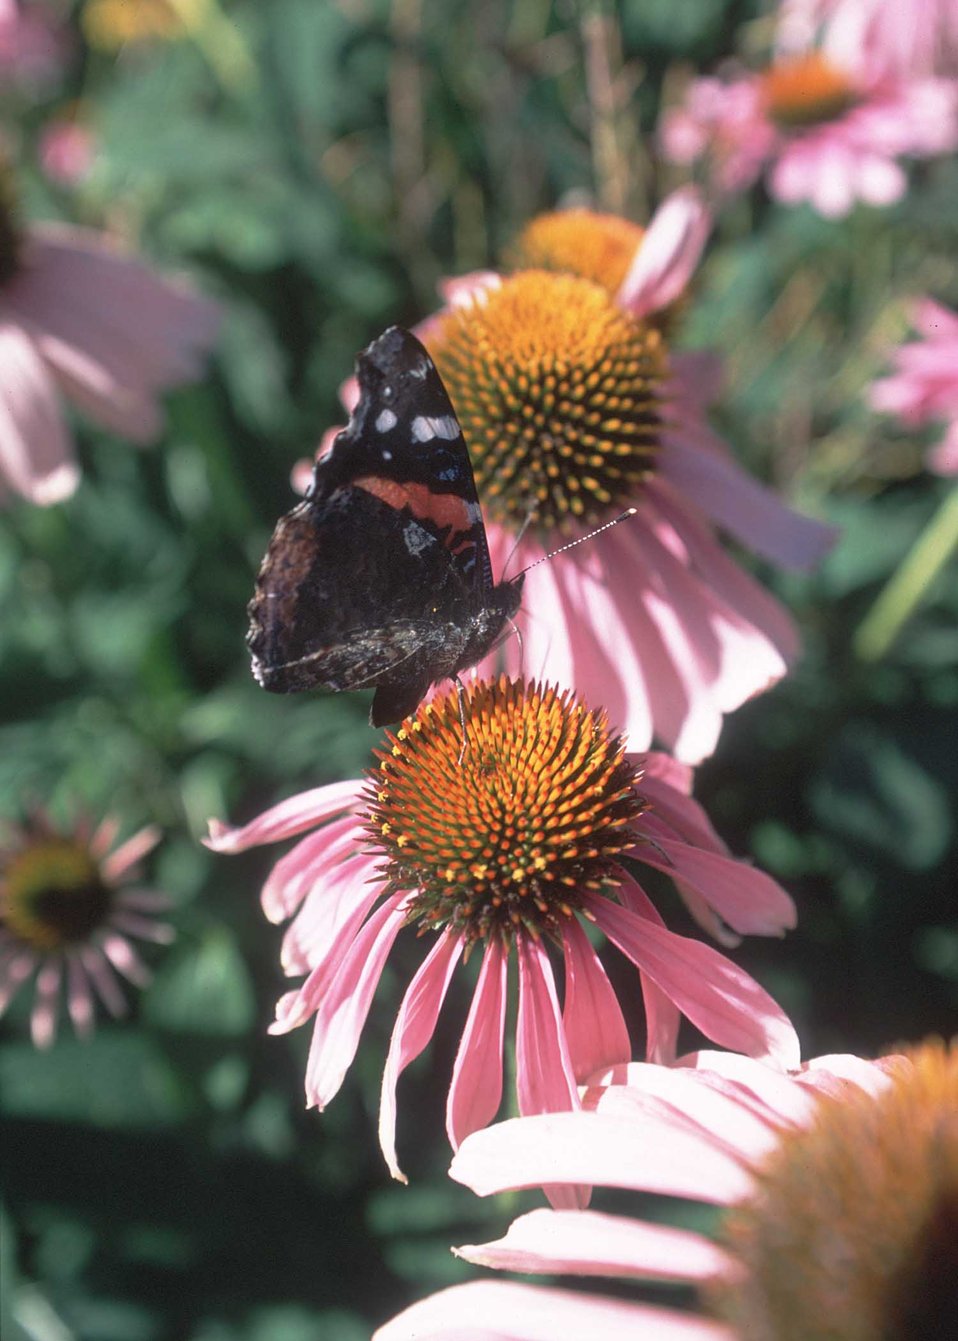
Butterfly pollinates prairie coneflower in a suburban flower garden.